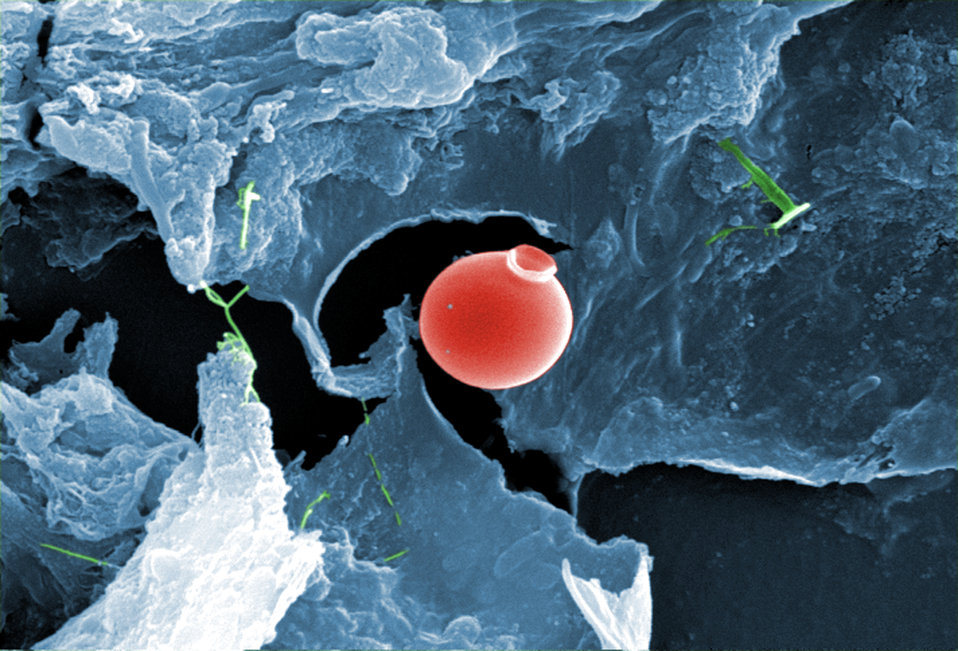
This digitally-colorized scanning electron micrograph (SEM) of an untreated water specimen extracted from a wild stream mainly used to control flooding during inclement weather, revealed the presence of unidentified organisms, which included bacteria, protozoa, and algae. Clearly visible in the center of this image, was a exquisitely-formed unidentified round vescicle-shaped microorganism, which may have been algal, or diatomic. Shaped like an ancient Grecian urn, the almost perfectly rounded smooth, flawless surface was made even more beautiful given its delicate structure.